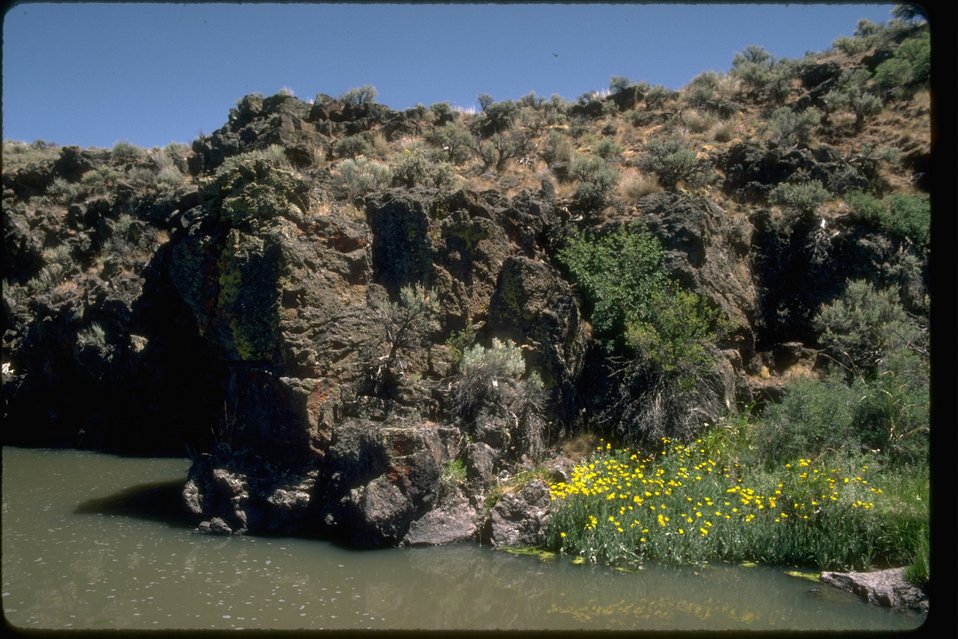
Guano Creek Wilderness Study Area.